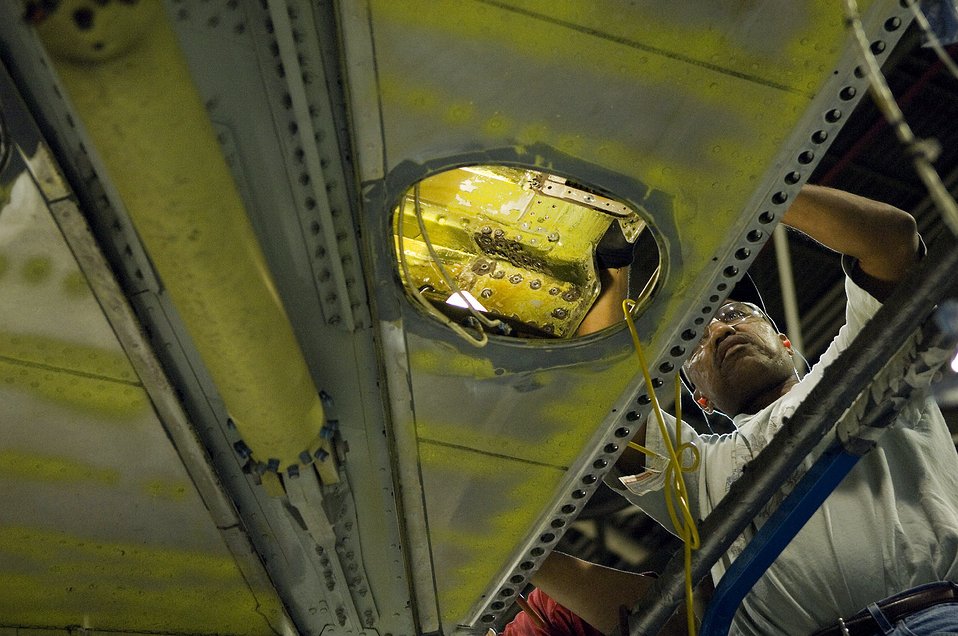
KC-135 Stratotanker

Maurice Hopson conducts maintenance on the production brake of a KC-135R Stratotanker inside the Oklahoma Air Logistics Center hanger being prepared for full maintenance overhaul May 14.